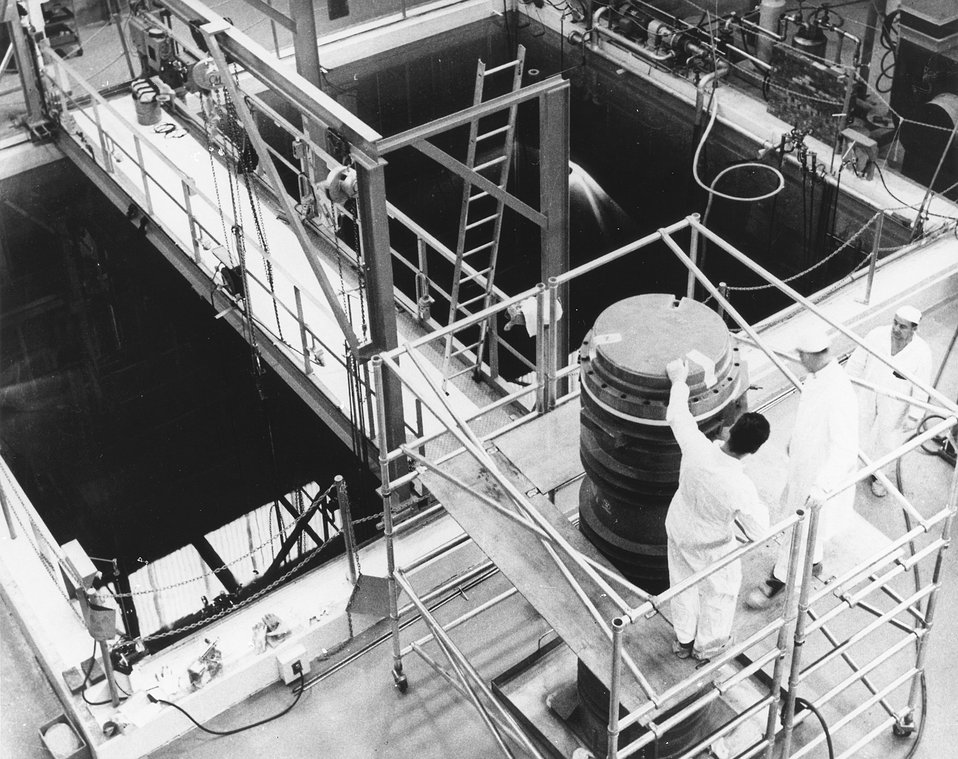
Post-irradiation inspection of Yankee fuel element: Shielded shipping cask containing a spent fuel element from the Yankee plant seen adjacent to pool of post-irradiation inspection facility. c. 1964